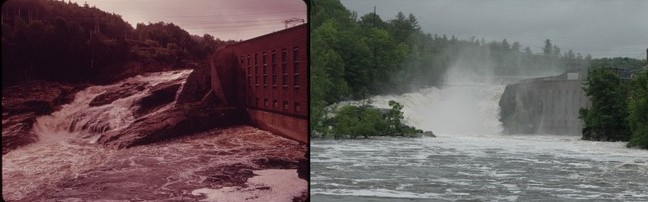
Rumford, ME 1973 and 2012

'Then' Documerica Photo: June, 1973 Androscoggin River Falls and Power Plant at Rumford by Charles Steinhacker.

Charles Steinhacker was one of nearly one hundred photographers hired for DOCUMERICA. His assignment took him to Maine in June 1973, where he photographed the Androscoggin from it's inland headwaters to the river's mouth on the coast of Maine. His photo set includes photographs of recreational fishing to evidence of water pollution from textile and paper mills.

'Now' photo: February, 2012 photograph by Victoria Hampshire. Victoria has graciously taken on the challenge to re-take scenes in her travels and we thank her family's involvement in this modern recreation of her father's legacy. Gifford Hampshire served as not only as the director of Documerica, but was the energy and life behind the project's vision.

Join in at www.flickr.com/groups/ourenvironment